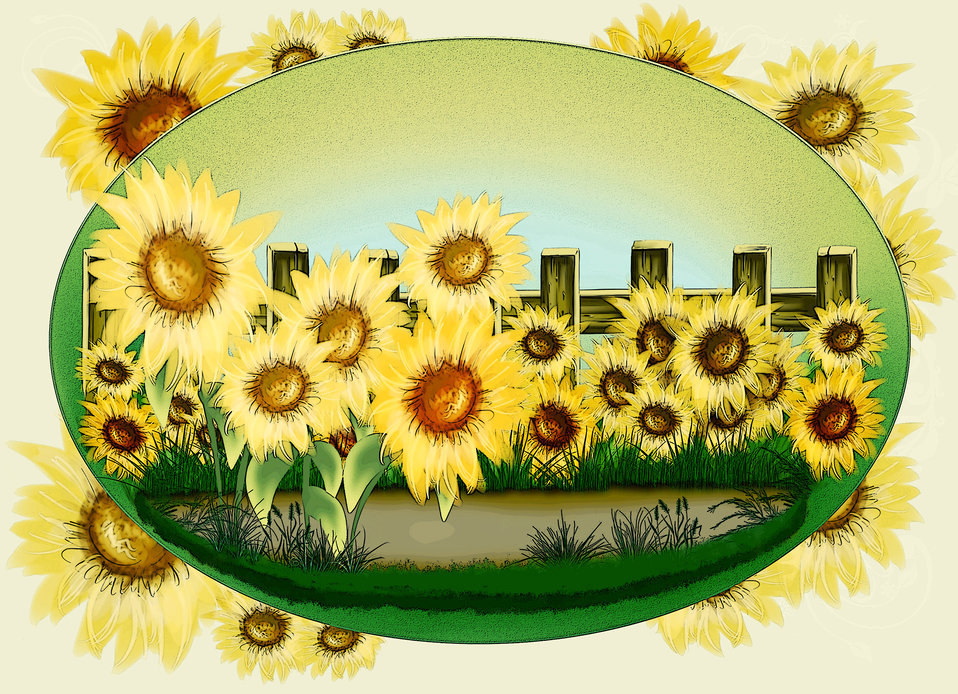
Background of sunflowers

Painted background with sunflowers.